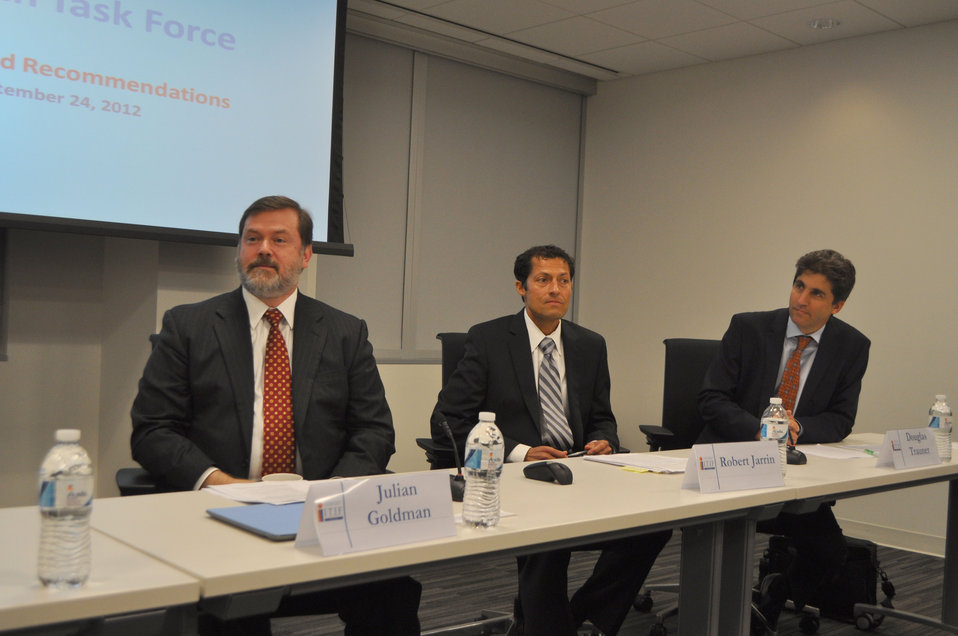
mHealth Task Force Findings and Recommendations Event - DSC 0658